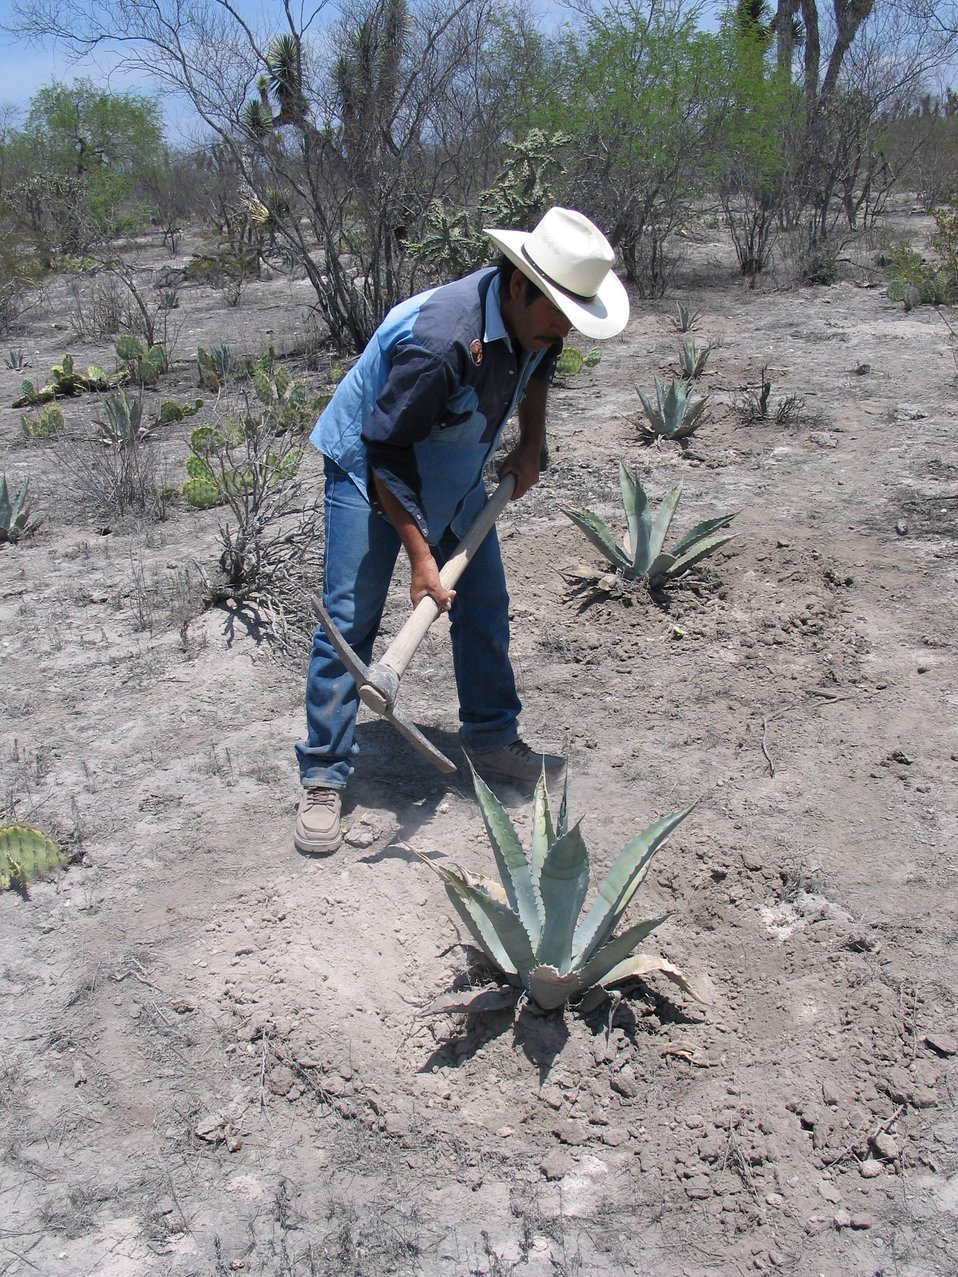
Agaves for erosion control

Planting native plants on slopes to control erosion around bat caves.